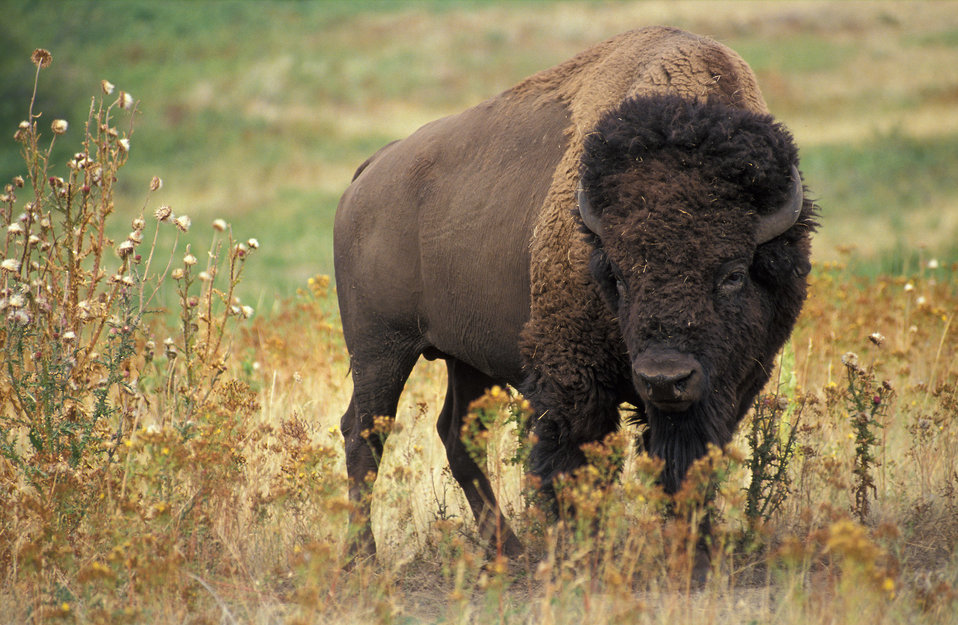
An American bison stands on rangeland in the West. U.S. Department of Agriculture (USDA) Agriculture Research Service (ARS) scientists are helping users of American rangelands meet the challenge of managing multiple uses sustainably.